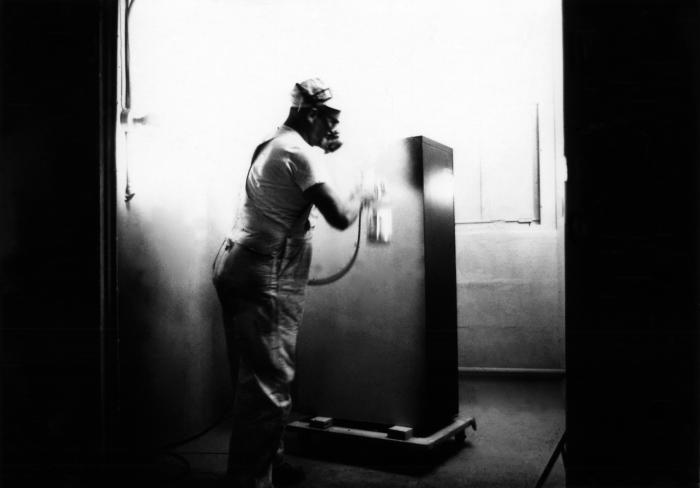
Thought to be from the 1970s, this historic image provided by the Center for Disease Control's (CDC), National Institute for Occupational Safety and Health (NIOSH), depicted an industrial spray-painter at work spraying an object inside the confines of a spray-booth. The painter was wearing a filterized breathing mask, as well as goggles, which are both necessary protective gear to be worn in this situation. One cannot tell whether or not the worker was wearing gloves, for the image is blurry.